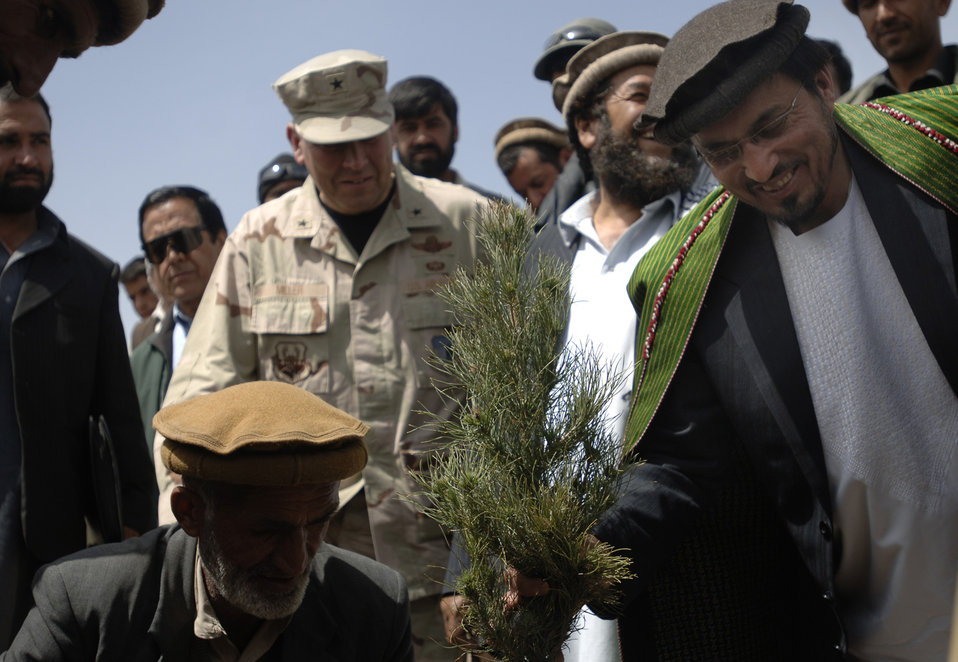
Bagram PRT rebuilds Afghanistan one school at a time

Hamidullah Hatam, accompanied by Brig. Gen. Christopher Miller, plants one of 3,000 pine and fruit tree saplings donated by the U.S. Bagram Provincial Reconstruction Team at Mahmud Raqi High School in Deh Baba Ali, Afghanistan, March 26. Bagram PRT members aided in building the high school and also donated several bundles of school supplies. Mr. Hatam is the education administer advisor for the Afghan Ministry of Education. General Miller is the 455th Expeditionary Wing commander.